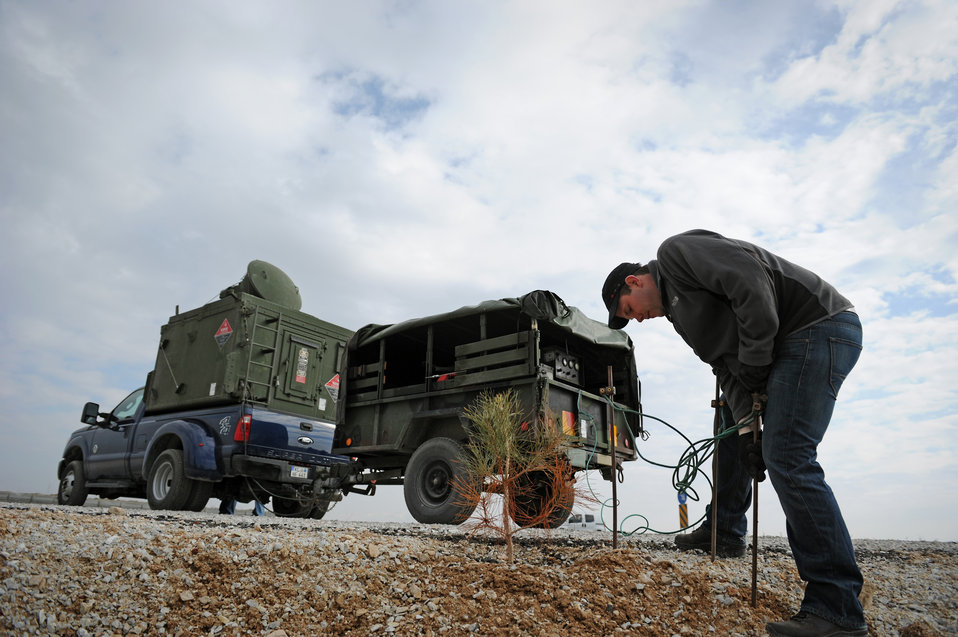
U.S. pilots plant SEAD with Turkish counterparts

Carl Gessman, a Polygone radar operator, attaches grounding rods for a generator used to power a tactical radar threat generator during Anatolian Falcon 2012 in Konya, Turkey, March 8, 2012. The radar provided a simulated enemy ground threat capability to the pilots participating in the exercise.